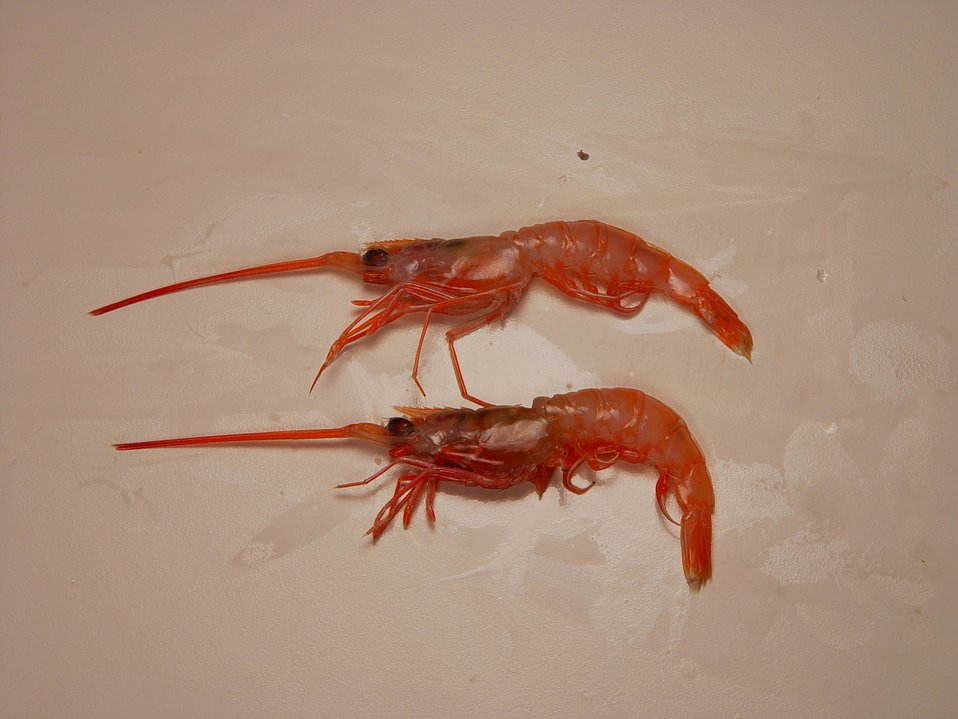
Humpback shrimp ( Solenocera vioscai )